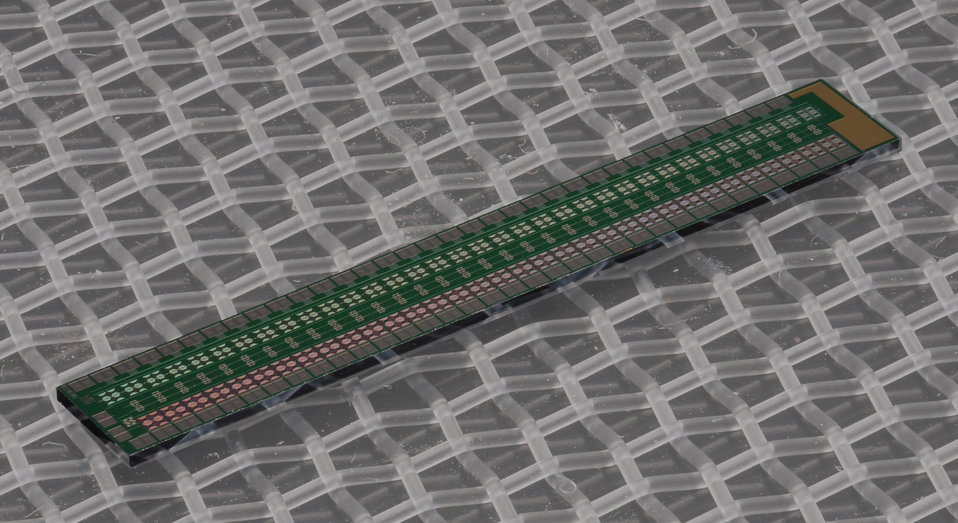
BICEP Telescope Camera Superconducting Circuit Chip

NIST chip identical to the 16 chips integrated into the BICEP2 telescope camera at the South Pole. Each custom superconducting circuit chip amplifies the electrical signals generated by 32 microwave detectors and assembles them into a sequential time stream.